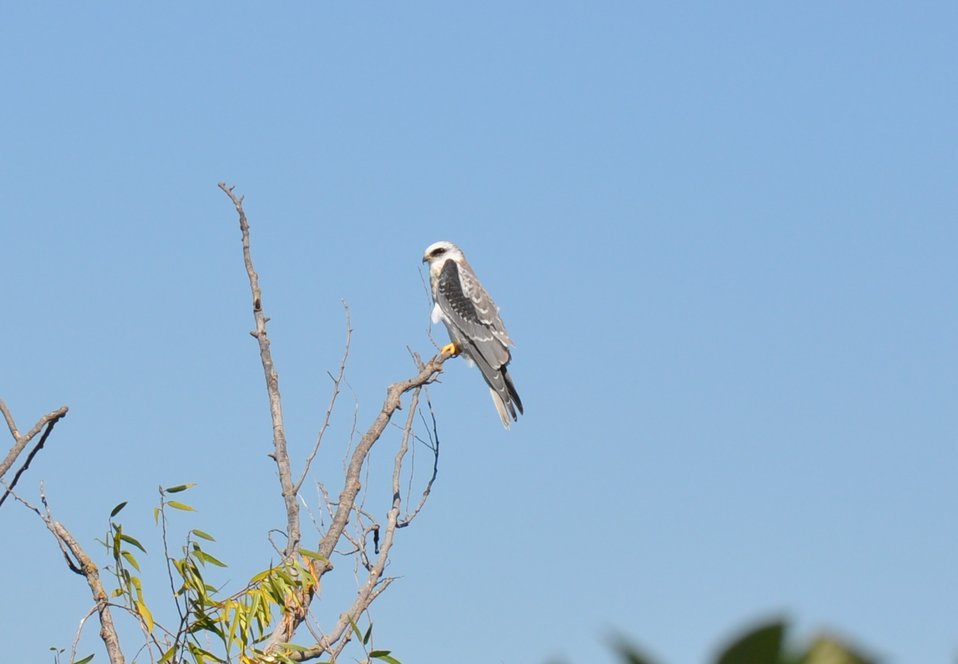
White-tailed kite/ USFWS photo by Brian Hansen

The White-tailed Kite was rendered almost extinct in California in the 1930s and 1940s by shooting and egg-collecting, but they are now common again. This one was found at Shin Kee, just north of Stockton, in the Delta. Their distribution is patchy, but they can be seen in California's Central Valley and southern coastal areas, and also around the San Francisco Bay, They are also found in southern Texas, on the Baja California peninsula, and in eastern Mexico,